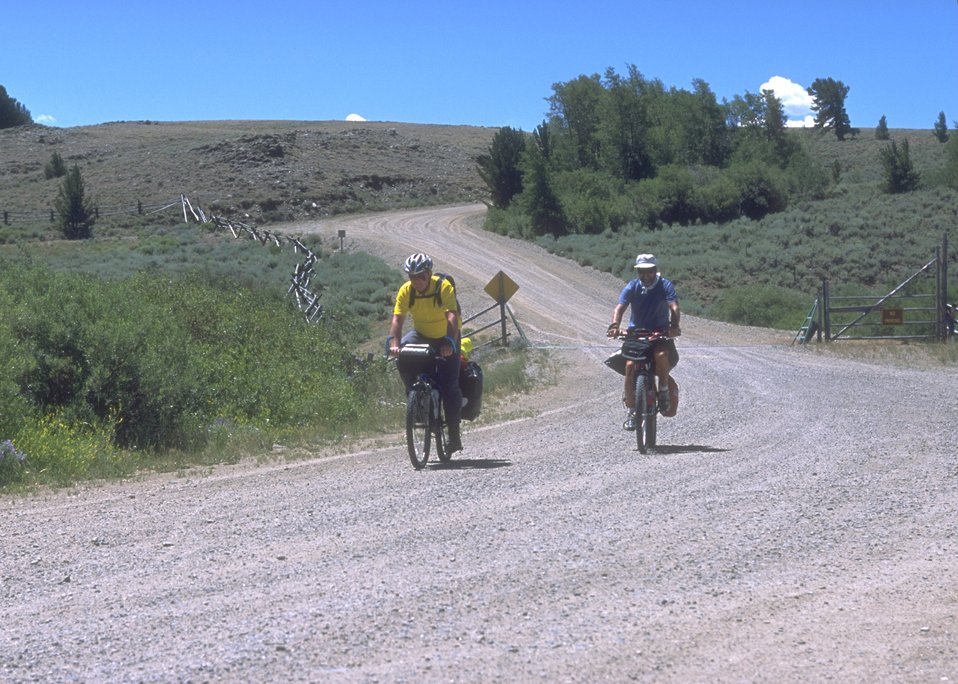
Biking the Continental Divide Trail at South Pass City, Lander Field Office.